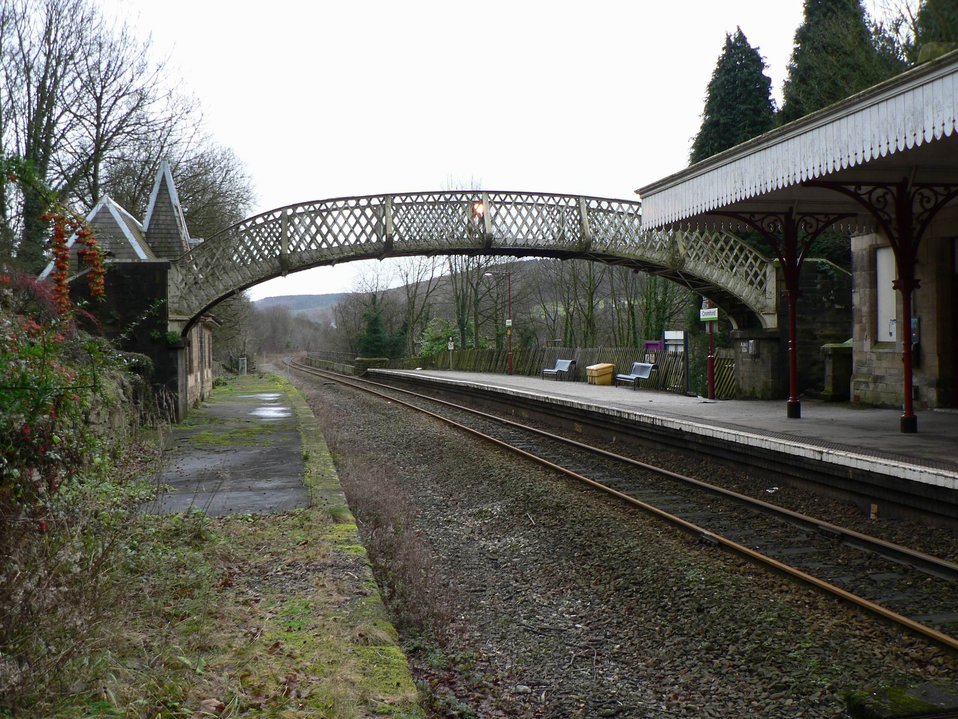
Cromford Station 01 01 2007